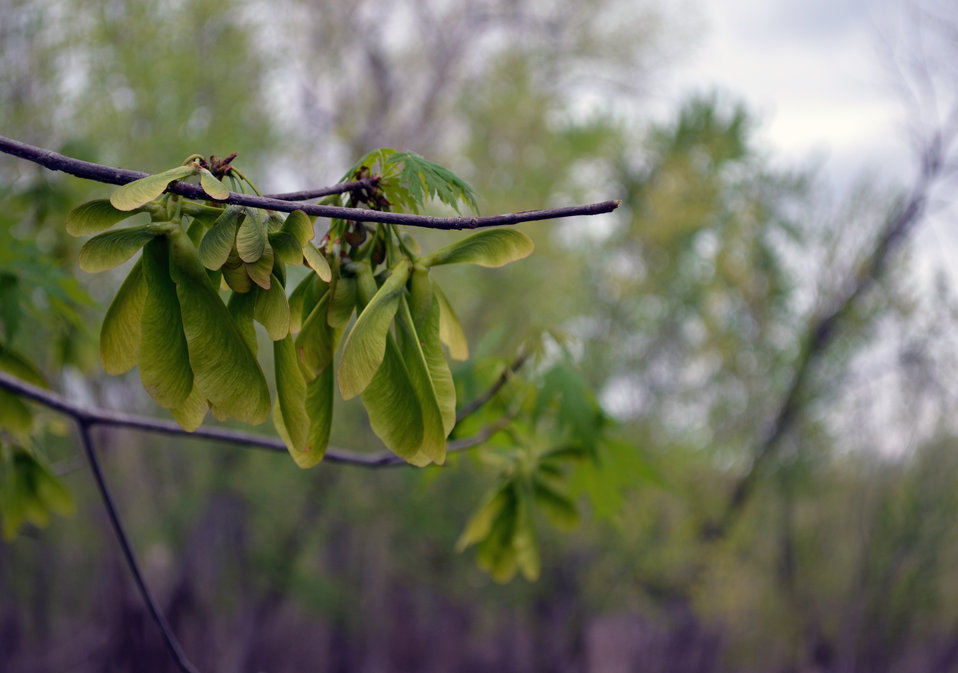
Silver Maple Samaras

These samaras are actually considered fruit. The shape of a samara enables the wind to carry the seed farther away than regular seeds from the parent tree. Samaras have several nicknames including helicopters, whirligig, polynose, and spinning jenny.